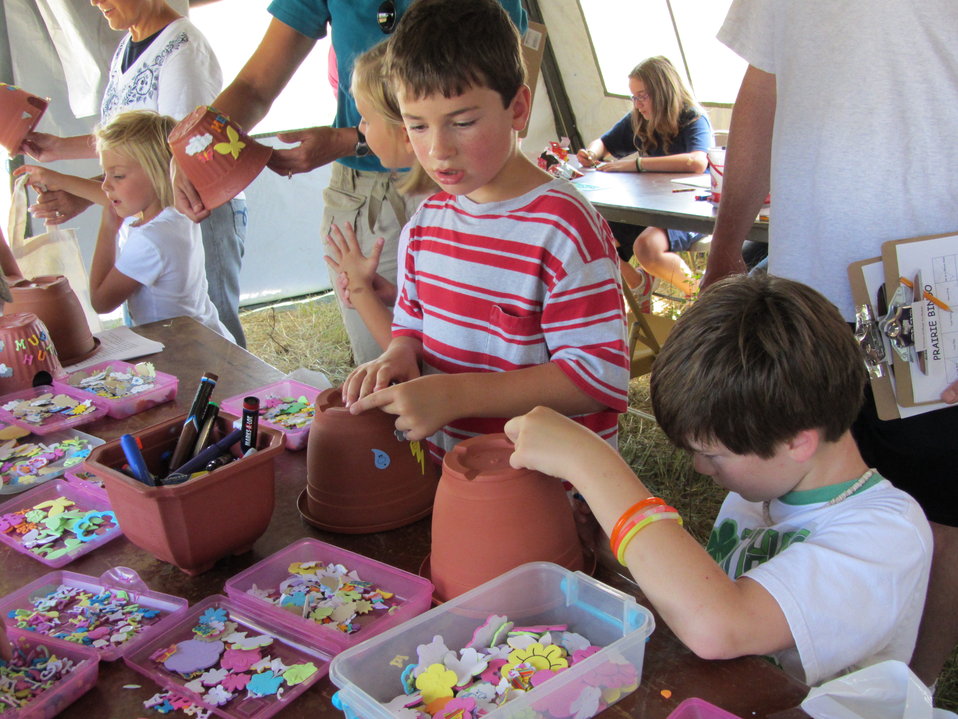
2011 Huron Prairie Fest